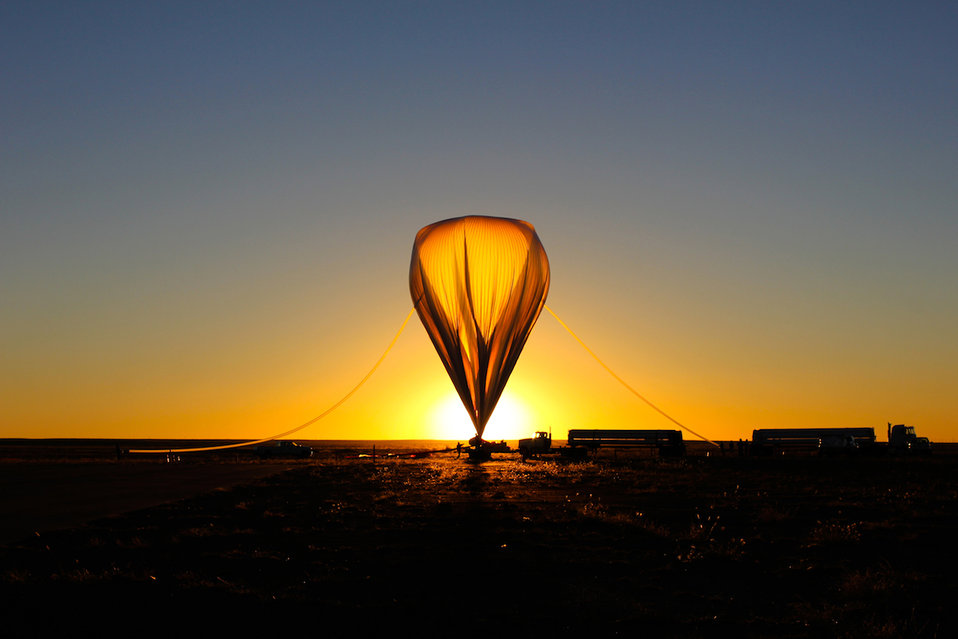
Scientific balloon launched from New Mexico in September 2013 carrying an experimental instrument designed to collect and measure the energy of light emitted by the Sun, with the help of NIST chips coated with carbon nanotubes.